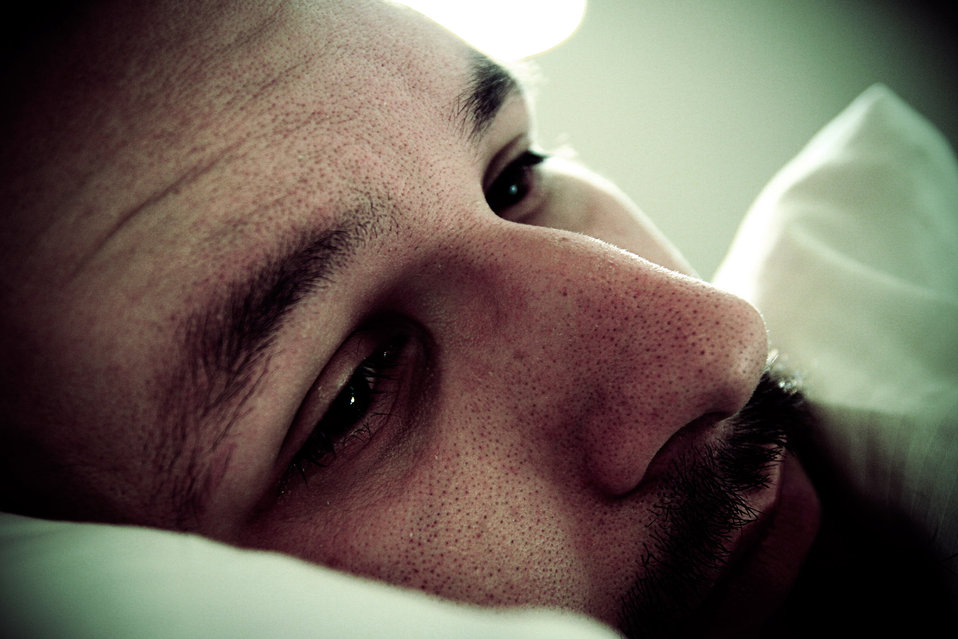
Depressed man

A sad guy staring into the distance.